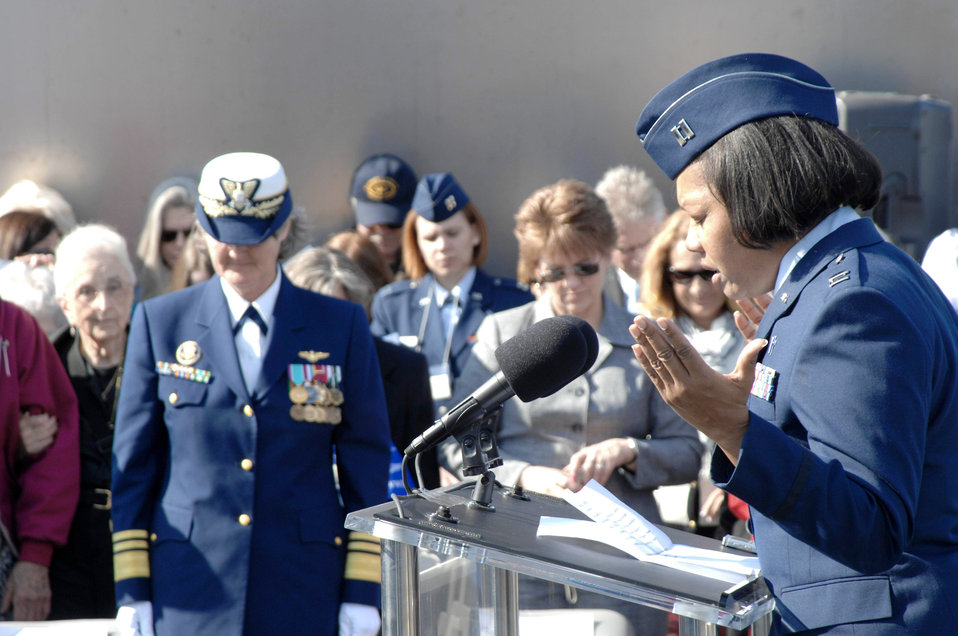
Female World War II pilots lay wreath at Air Force Memorial

Chaplain (Capt.) Jamie Martin gives the invocation to Women Airforce Service Pilots members and guests at a ceremony March 9, 2010 in Arlington, Va., to honor the 38 WASPs who lost their lives in the line of duty.